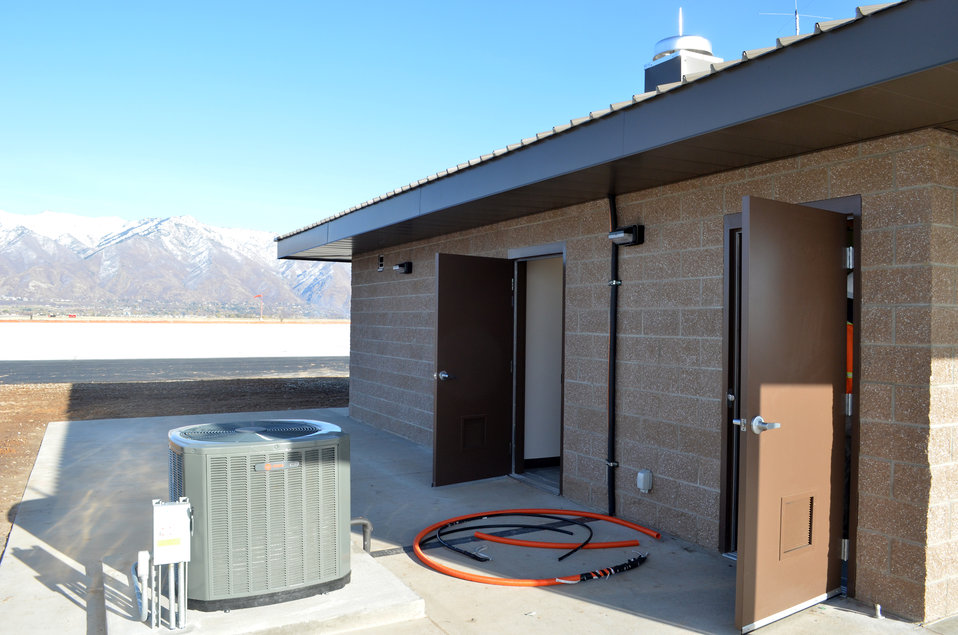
Taxiway apron nears completion at Hill Air Force Base

A side view of a new chief shelter and concrete pad (background), part of a $4.48 million project at Hill Air Force Base, Utah, Nov. 16, 2011. The U.S. Army Corps of Engineers Sacramento District is overseeing construction of the new apron, which will serve as pad for arming and disarming aircraft, and is expected to be completed in mid-January 2012.